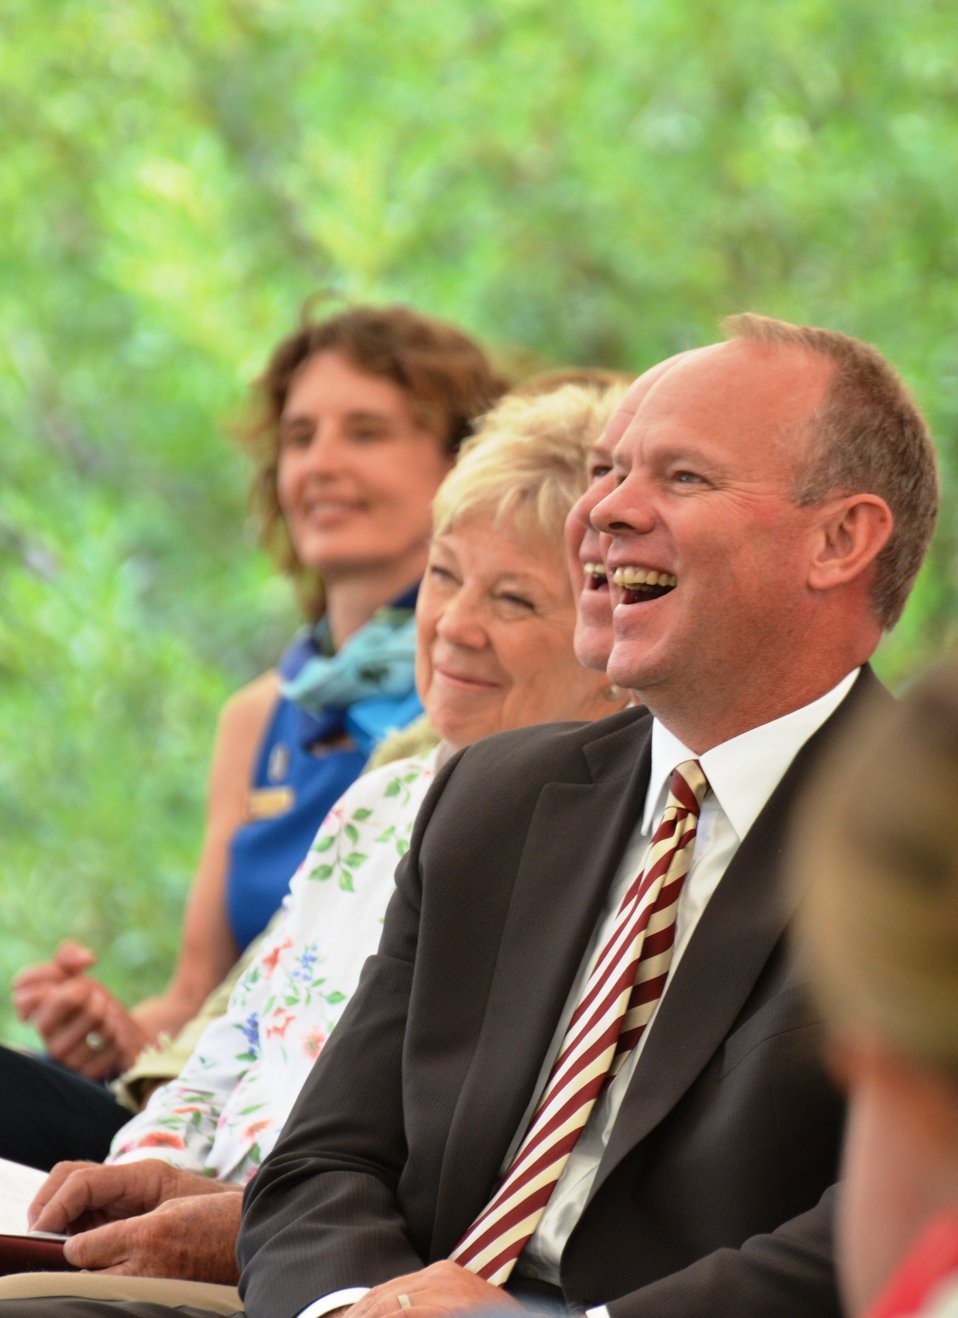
A Light-Hearted Moment

Wyoming Governor Matt Mead, along with former USFWS Director John Turner, his wife Mary Kay, and National Elk Refuge Outdoor Recreation Planner Lori Iverson enjoy a laugh during the refuge's centennial ceremony.

Credit: USFWS / Bobby Harkey, National Elk Refuge volunteer